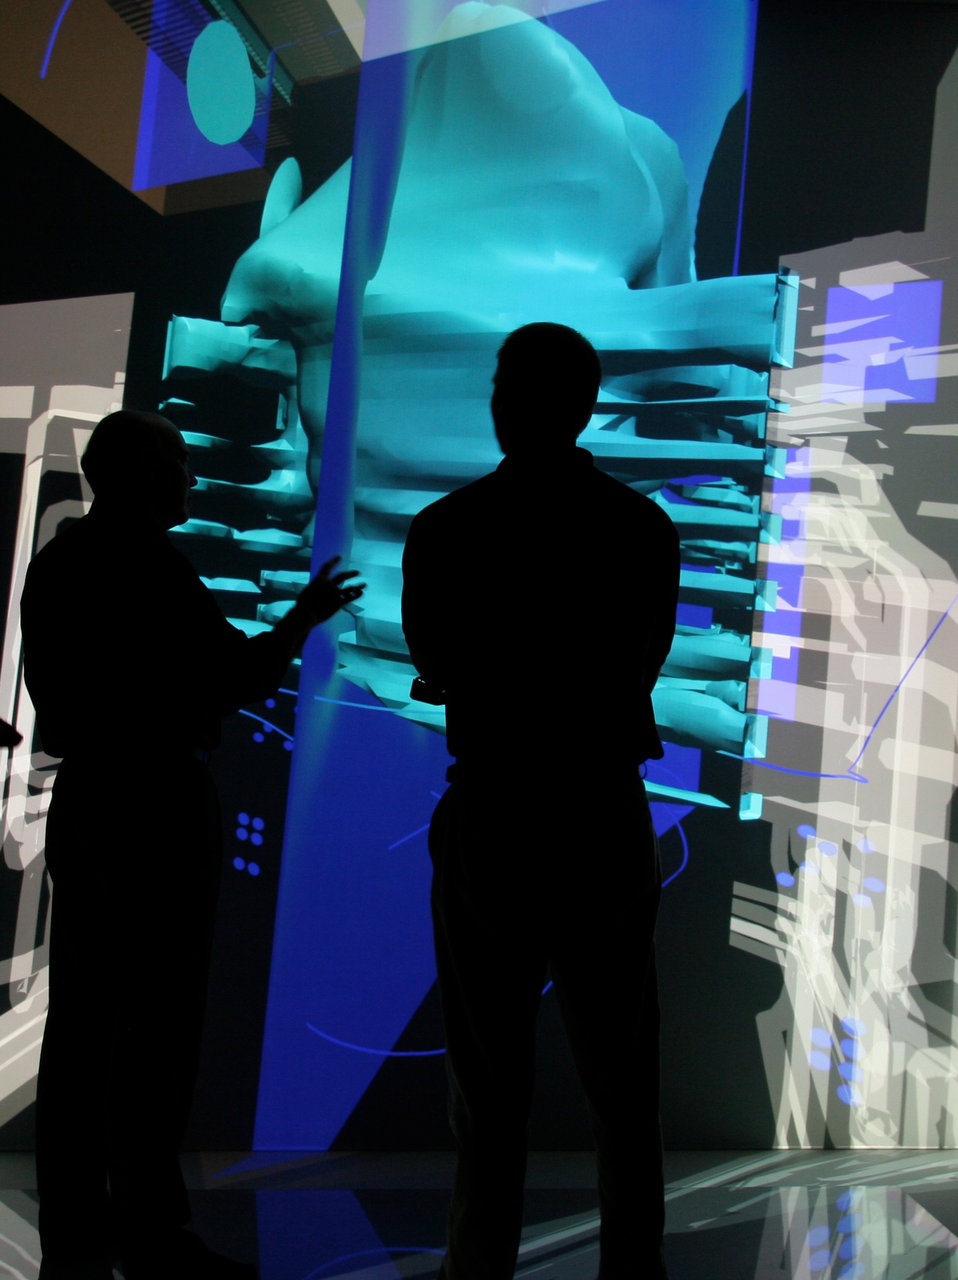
VE-Suite, a virtual engineering tool developed at Ames Laboratory, displayed on a six-sided virtual reality room.

VE-Suite helps engineers build greener, next-generation power plants faster and less expensively than ever before.